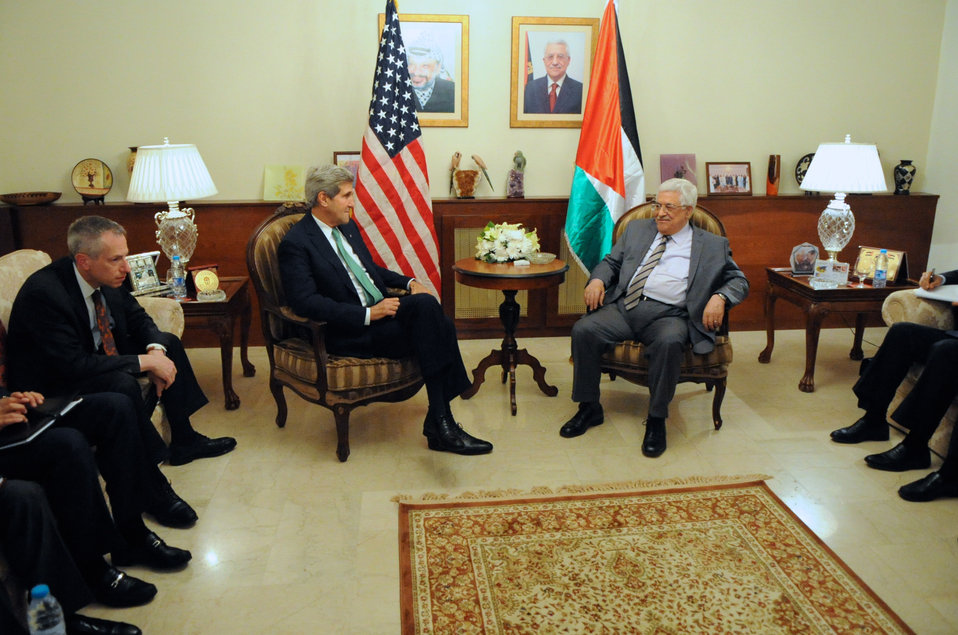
Secretary Kerry Speaks With Palestinian Authority President Abbas

Flanked by Jerusalem Consul General Michael Ratney, U.S. Secretary of State John Kerry speaks with Palestinian Authority President Mahmoud Abbas before a working dinner in Amman, Jordan, on November 7, 2013, that focused on Middle East peace issues.